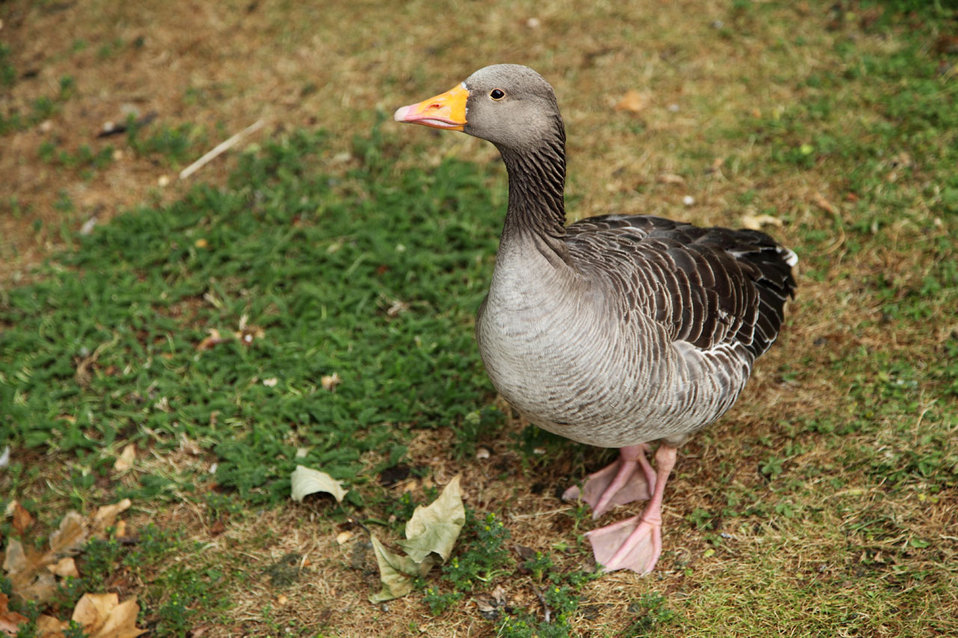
Greylag goose on grass.